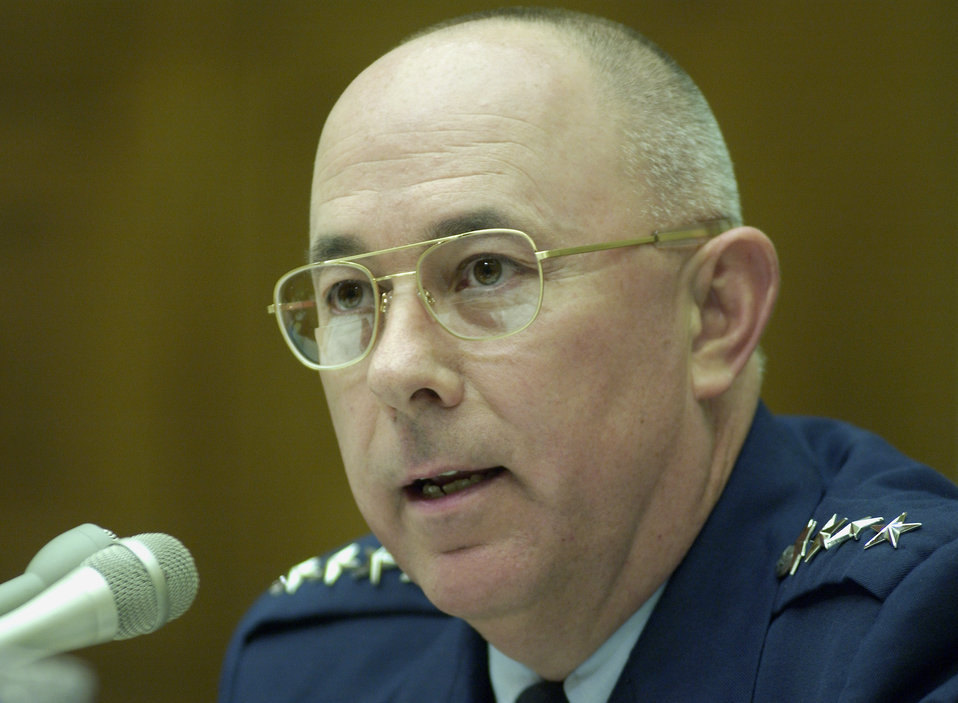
Reconstitution testimony

WASHINGTON -- Air Force Vice Chief of Staff Gen. T. Michael Moseley answers questions from members of the House Armed Services Committee subcommittee on readiness Oct. 21 during testimony on Capitol Hill. Moseley and his sister-service counterparts testified to the reconstituting efforts under way by the Department of Defense.